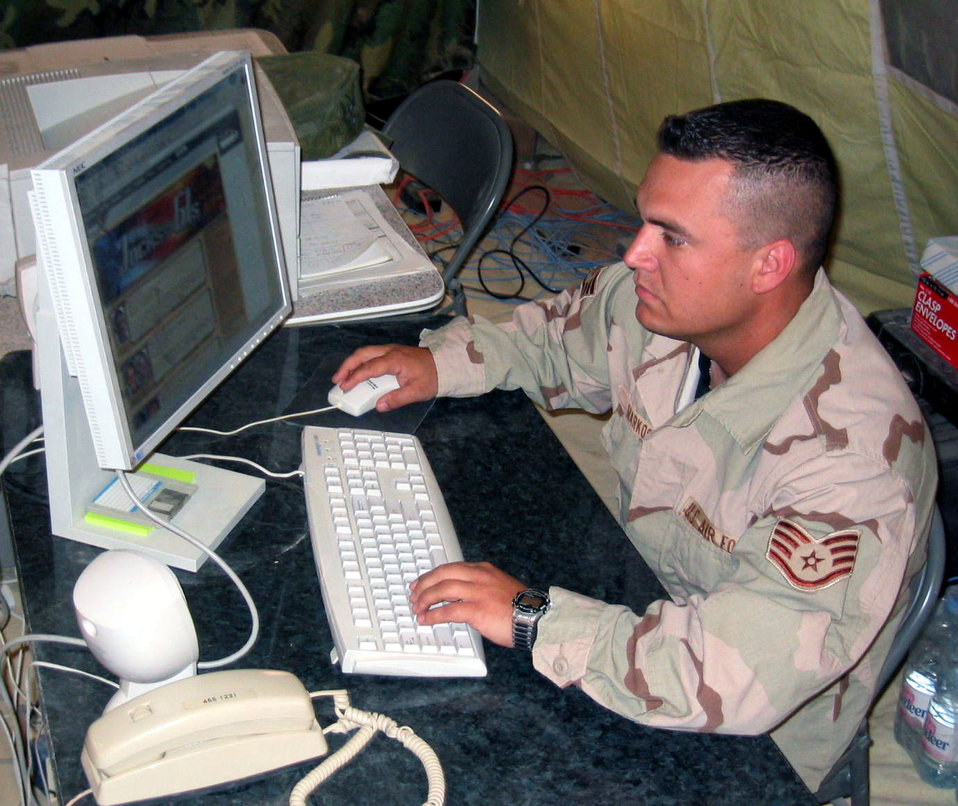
'Jocks-to-GIs'

OPERATION IRAQI FREEDOM -- Staff Sgt. Marty Markos, a personnel specialist forward deployed with the 444th Air Expeditionary Group, is one of the nation's first servicemembers to participate in ESPN's